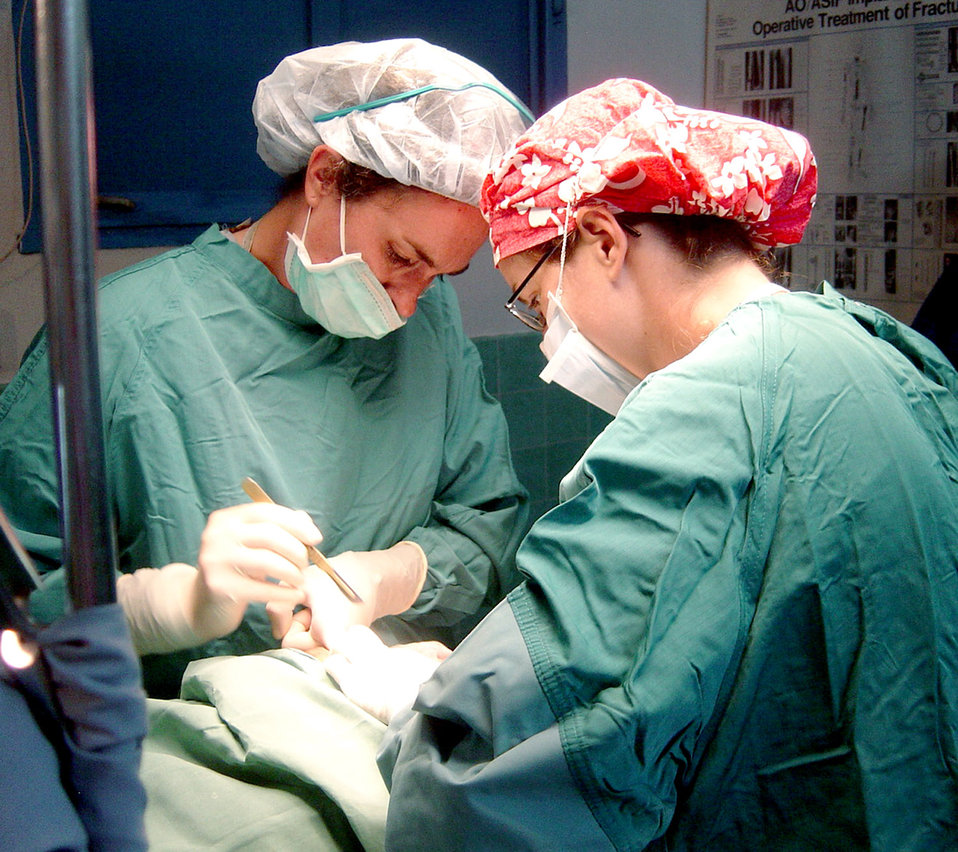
Humanitarian mission impacts team, residents

Navy Cmdr. (Dr.) Amy O'Boyle and Navy Lt. Jennifer Ftiscar perform surgery on a local woman July 25 at Espiritu Santo hospital in Vanuatu. Commander O'Boyle is a an obstetrics/gynecological surgeon, and Lieutenant Ftiscar is an OB/GYN resident, both from Naval Medical Center Portmouth, Va. They were part of an OB/GYN surgical team that visited Espiritu Santo island in the nation of Vanuatu to train medical staff and perform surgery. The team was part of the Oceania Humanitarian Assistance Mission that brought medical, dental and engineering servicemembers to perform civil assistance projects on Vanuatu, Nauru and Kiribati July 20 through 30.